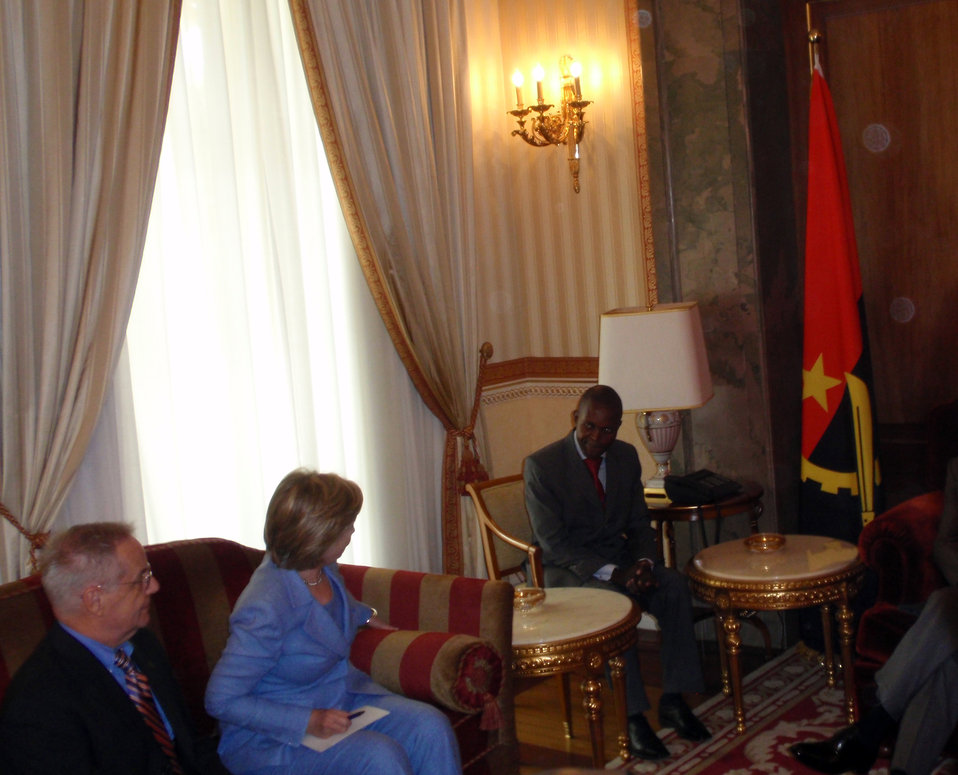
Secretary Clinton Meets With Angolan President

U.S. Secretary of State Hillary Rodham Clinton during her meeting with Angolan President José Eduardo dos Santos in Luanda, Angola August 10, 2009.